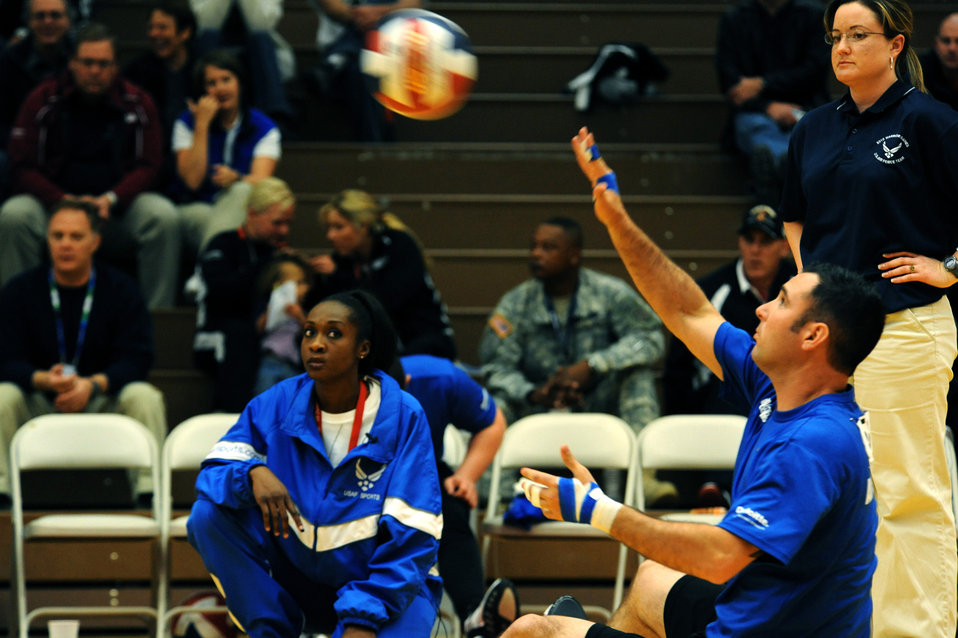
Warrior Games Volleyball

Air Force Warrior Games athlete, Staff Sgt. Christoper D'Angelo, serves the ball during the Warrior Games sitting volleyball match against Army at the U.S. Olympic Training Center in Colorado Springs, Colo., May 13, 2010.